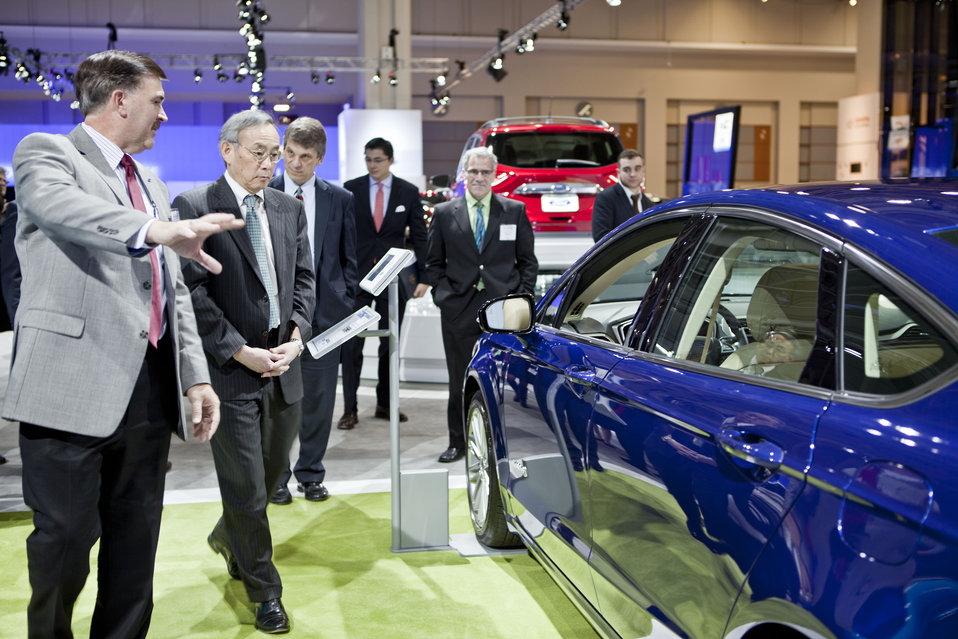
Energy Secretary Steven Chu discusses the Focus Hybrid -- Green Car Journal's 2013 Green Car of the Year -- with the Ford representative.